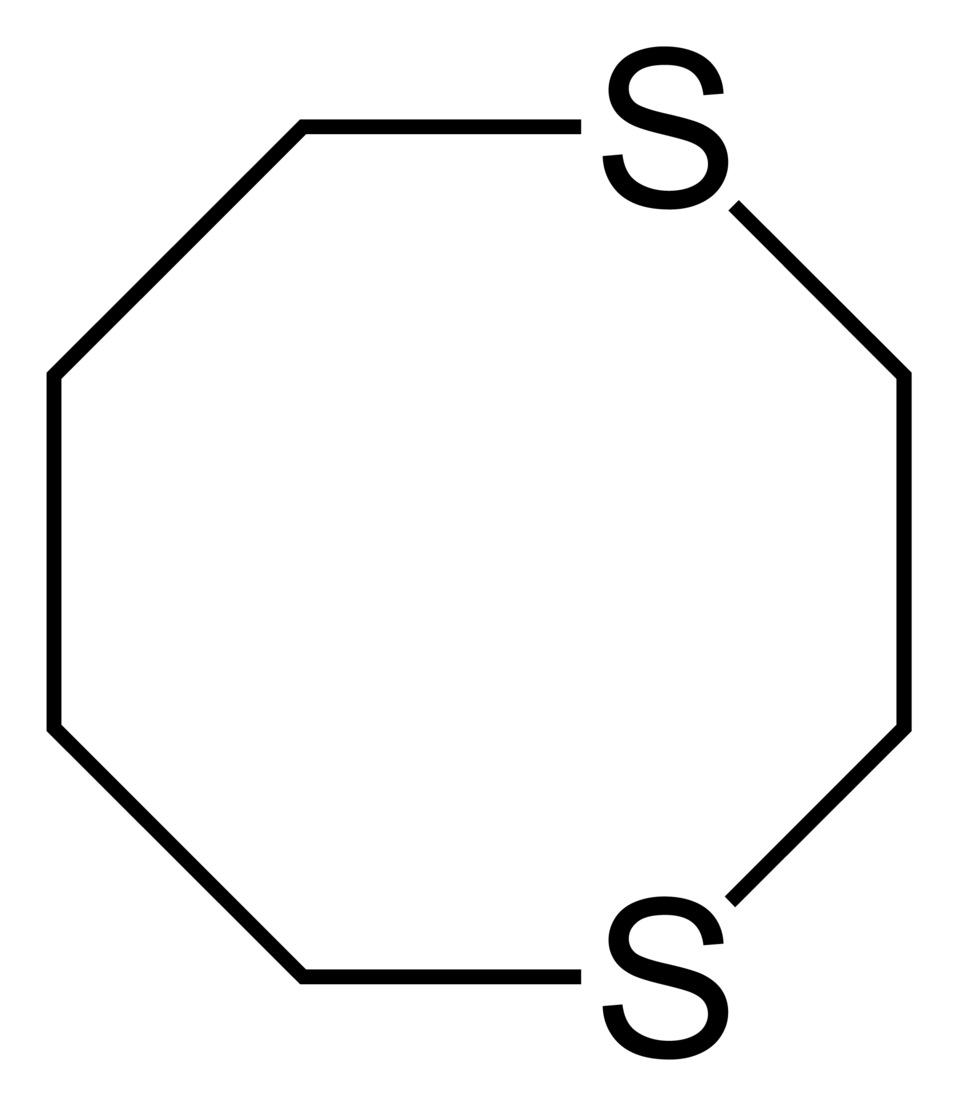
Skeletal formula of the 1,4-dithiocane molecule, C6H12S2.